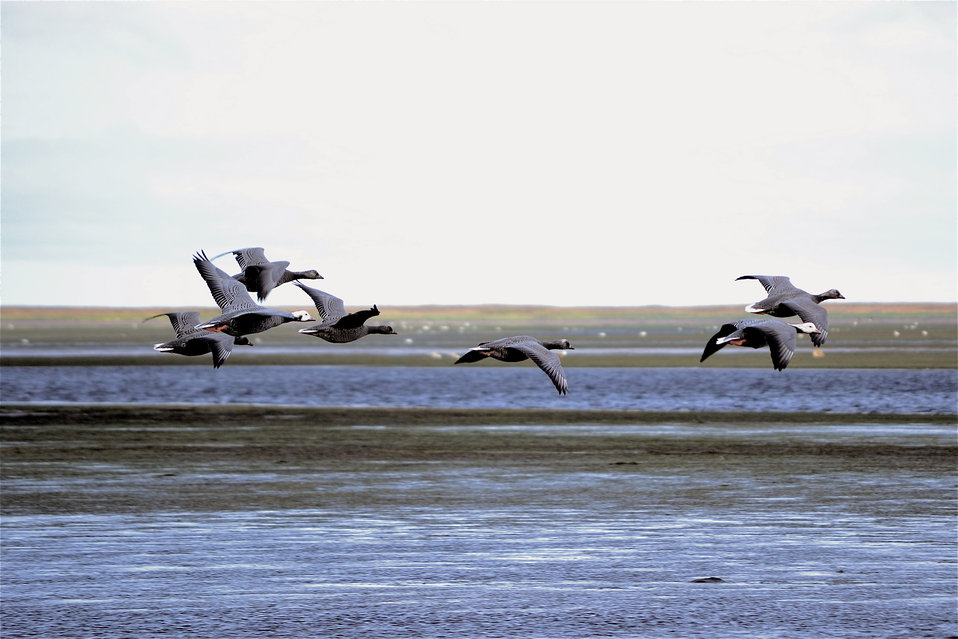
emperor geese

Juveniles and adults flying over Izembek Lagoon in mid-October 2011 (Izembek National Wildlife Refuge).